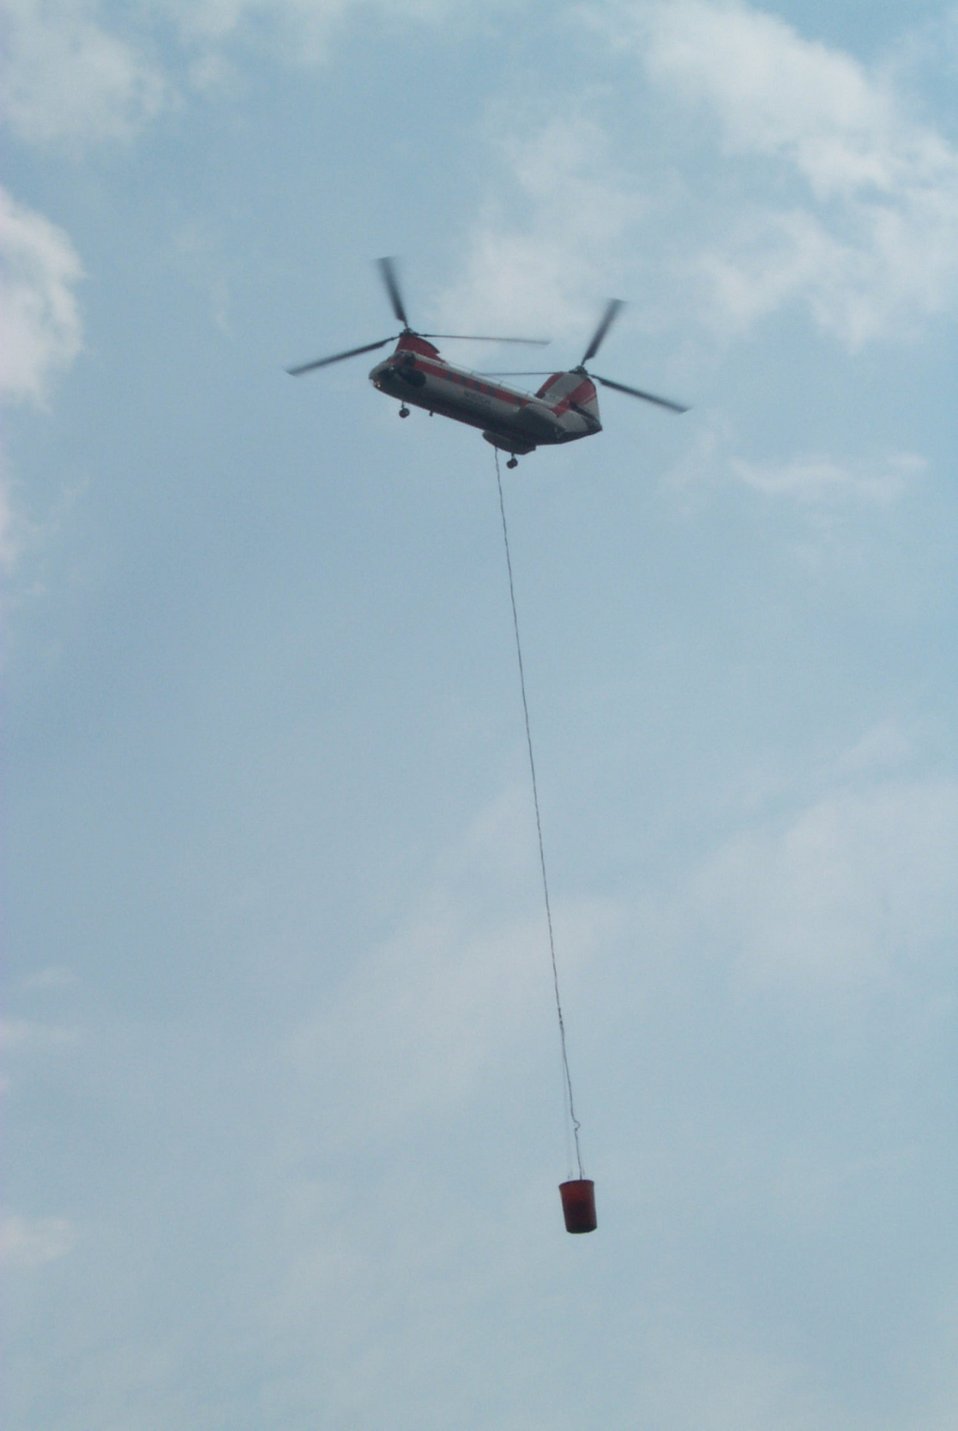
Helicopter drop Fire Clearwater Fire Salmon Field Office USRD Upper Snake River District